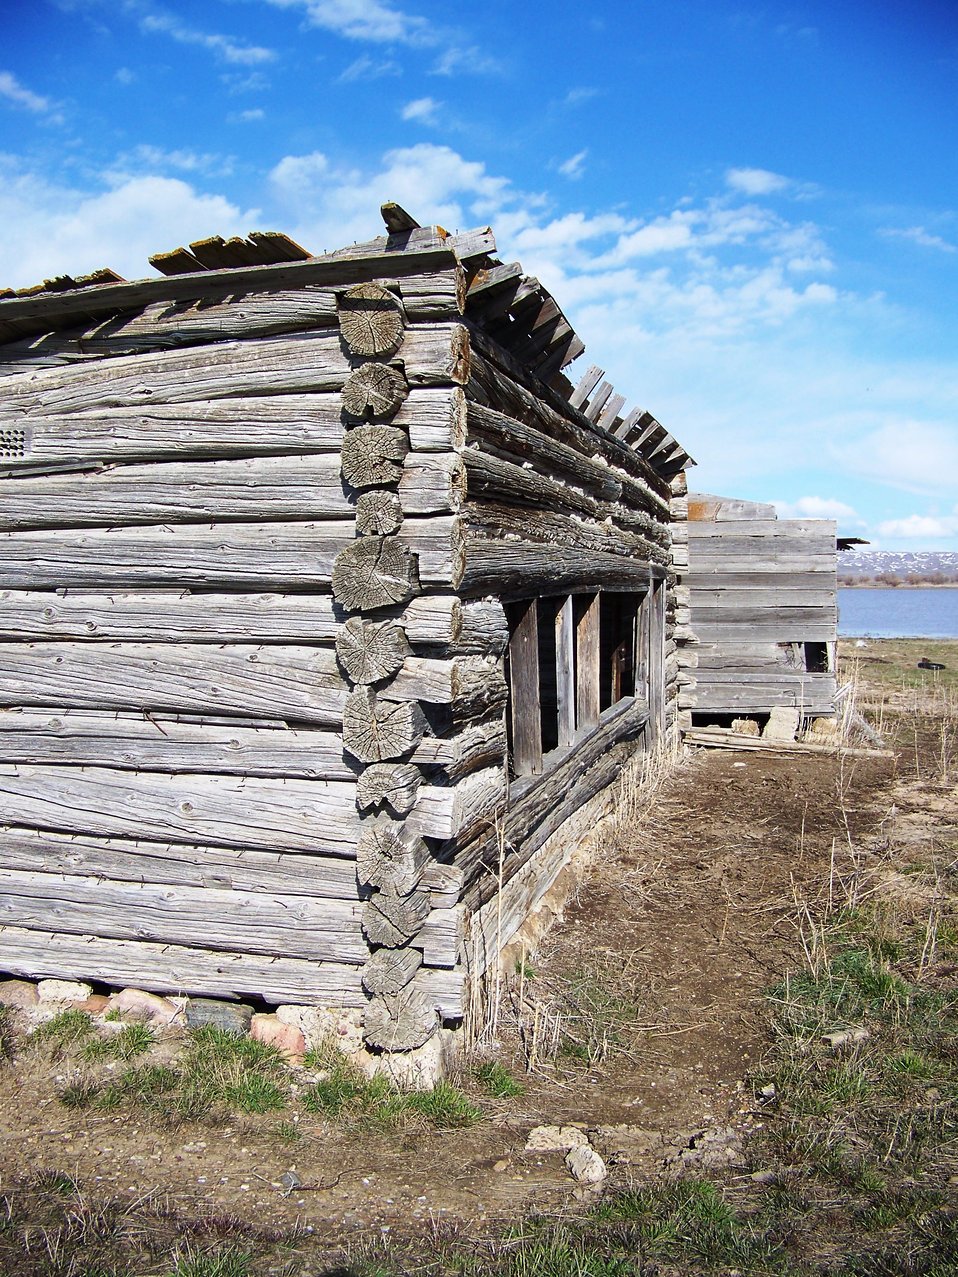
Abandoned Farmstead

Early stettlers used Ponderosa pine found 70 miles south, along the Missouri River, to contruct their log homes. Log cabing is south of Bowdoin NWR